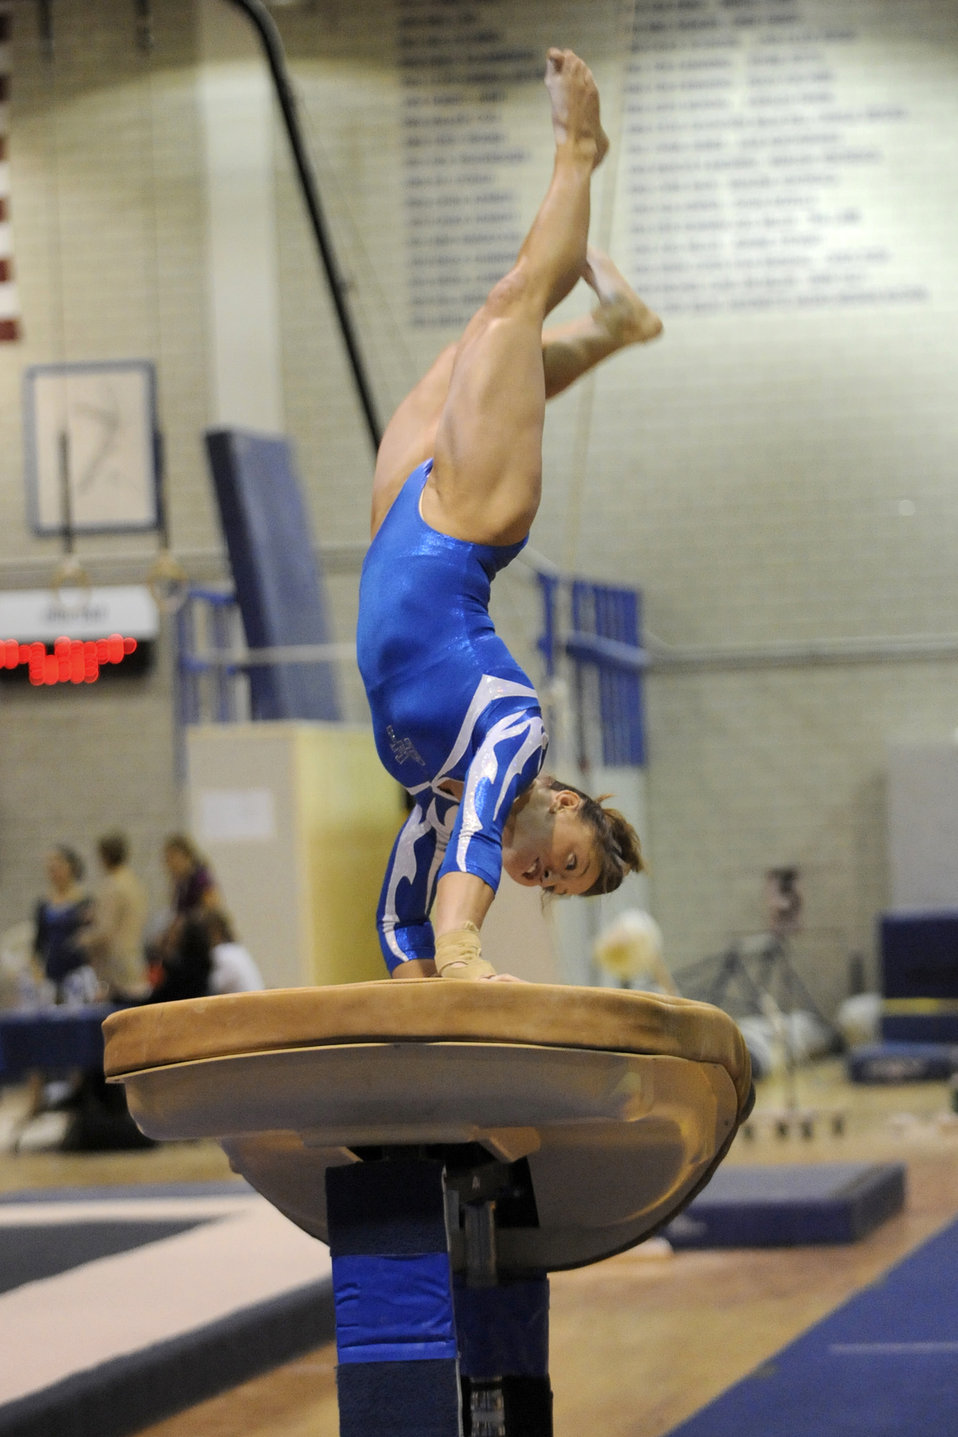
Falcon gymnasts compete against UC Davis

Air Force Academy junior Holland Davis vaults for the Falcons during the Air Force's meet against University of California Davis Jan. 30, 2010, in the Cadet Gymnasium. Air Force lost the meet 191.575 to 185.300 despite two event titles. Sophomore Jenna Dudley took the floor exercise with a tally of 9.775, and junior Brittany Dutton took the vault title with a 9.625.